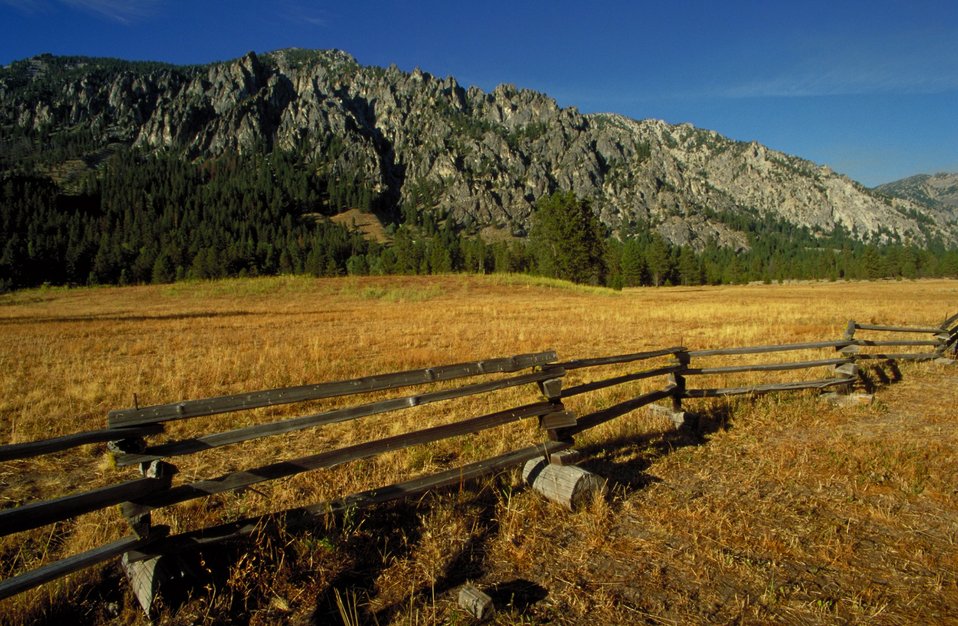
Fuels Fire Season 2000 Lower Snake River District LSRD